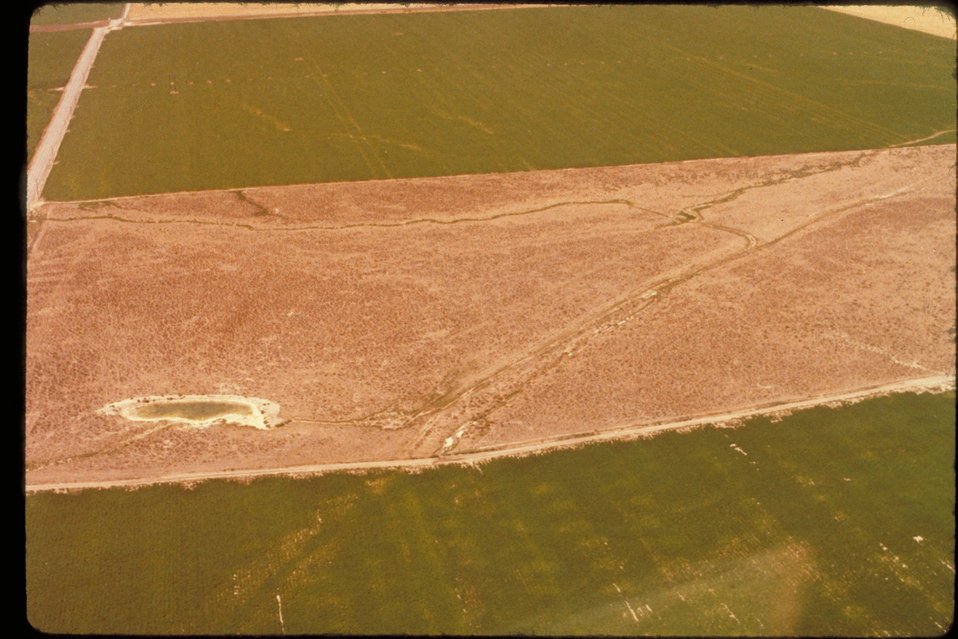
Oregon Trail west of Salmon Falls Cultural resource Historic area LSRD Lower Snake River District